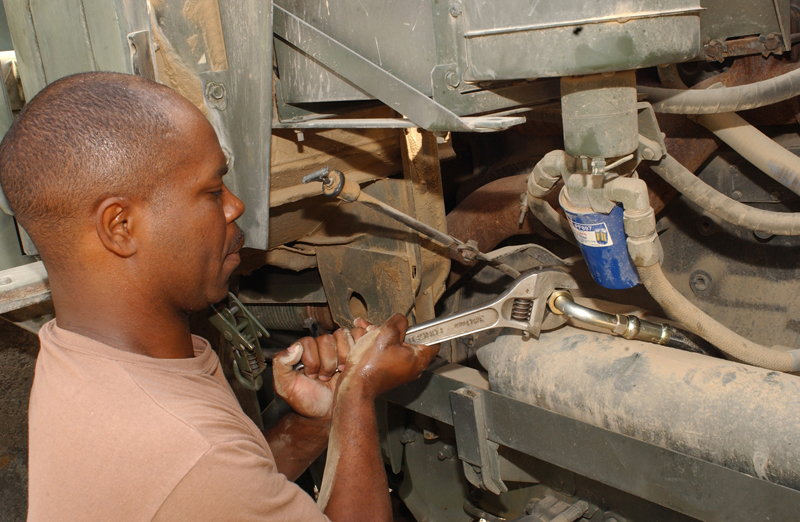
Getting hosed

BALAD AIR BASE, Iraq -- Staff Sgt. Darnell Roberts changes a tow truck hydraulic hose that has a leak. The sergeant works at the heavy equipment shop is with the 332nd Expeditionary Logistics Readiness Squadron here.